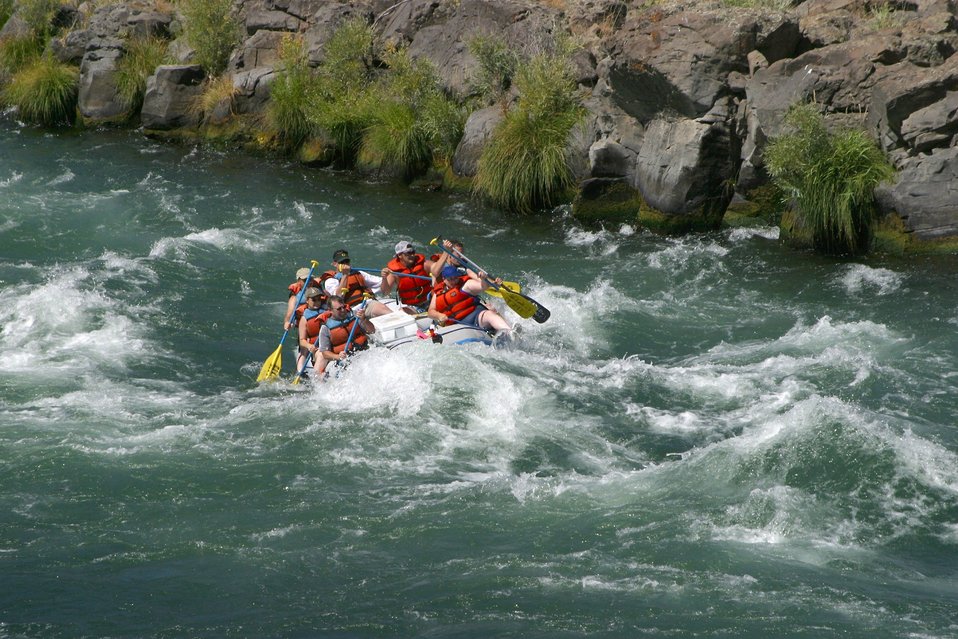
Wapinitia Rapids class III, has large roller coaster waves. 7/26/03 Pelton Dam 3600 cfs: Moody Rapids 4300 cfs.